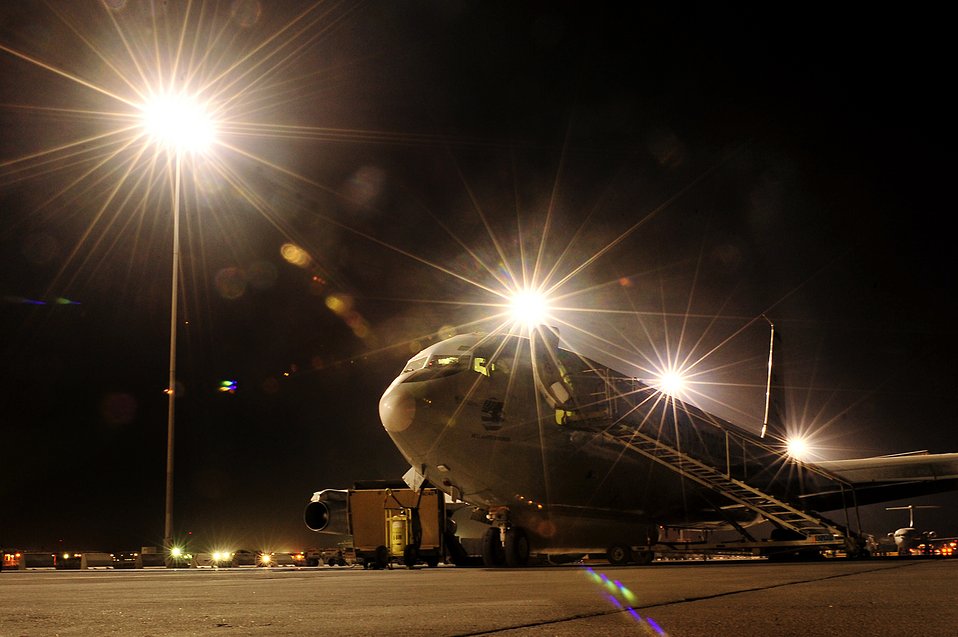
40,000 combat hours

An E-8C Joint Surveillance Target Attack Radar System aircraft sits on the ramp at an air base in Southwest Asia Sept. 1 before a mission over Iraq. The flight will mark 40,000 combat hours supporting the war on terrorism for the deployed Airmen of the 116th Air Control Wing. The E-8C Joint STARS, from the 7th Expeditionary Air Combat and Control Squadron, is an airborne battle management, command and control, intelligence, and reconnaissance aircraft.